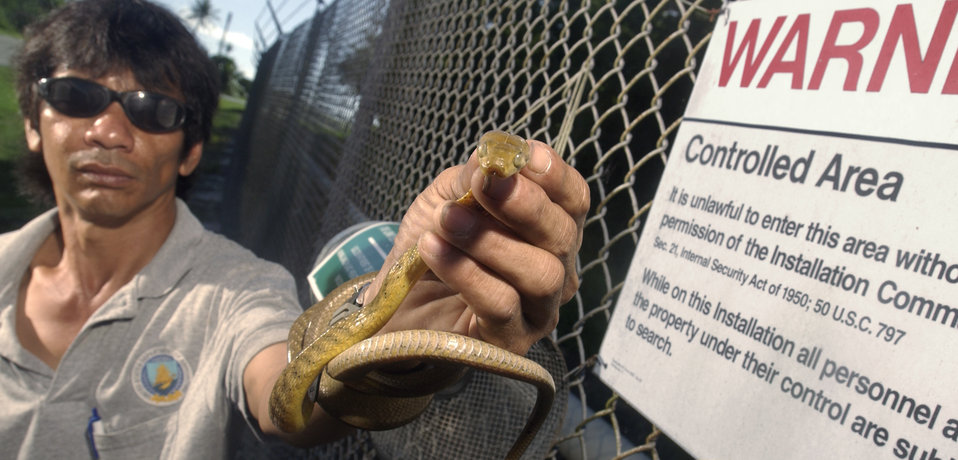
Keeping the serpent at bay

ANDERSEN AIR FORCE BASE, Guam -- Jess Guerrero, a Department of Agriculture wildlife specialist in Guam, holds a brown tree snake retrieved from one of dozens of snake traps hanging on the Andersen AFB flightline fence. The Air Force and the Agriculture Department are partners in the effort to contain the snakes and prevent accidental migration of the serpents to Hawaii and other Pacific islands.